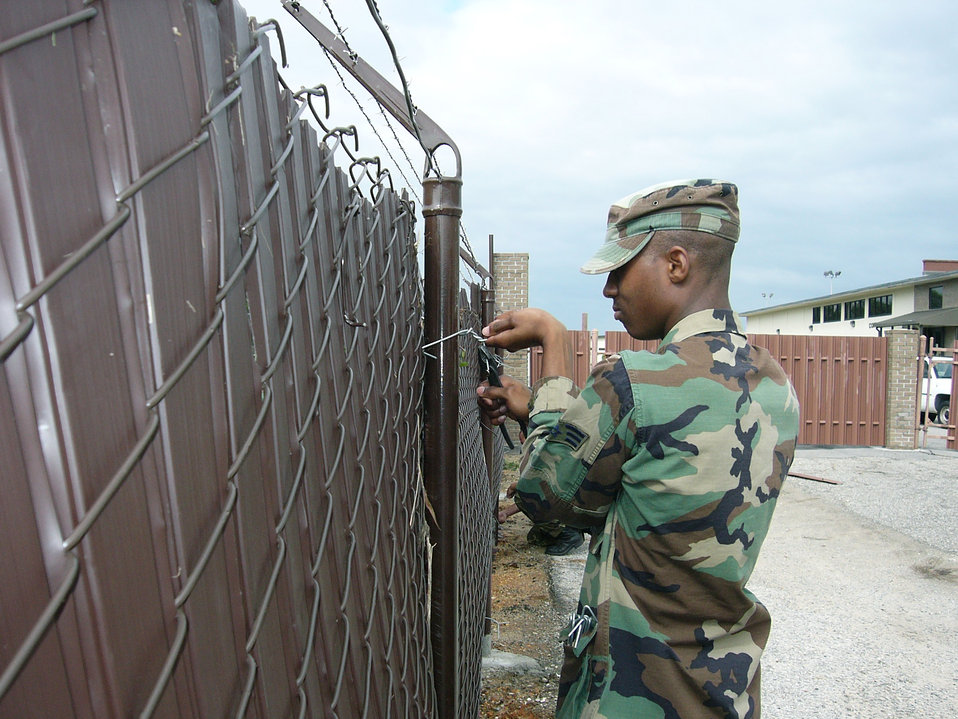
Ivan's wrath

KEESLER AIR FORCE BASE, Miss. -- Senior Airman Derrick James repairs a portion of the base's perimeter fence that was damaged by Hurricane Ivan early Sept. 16. Airman James is assigned to the 81st Civil Engineer Squadron here.